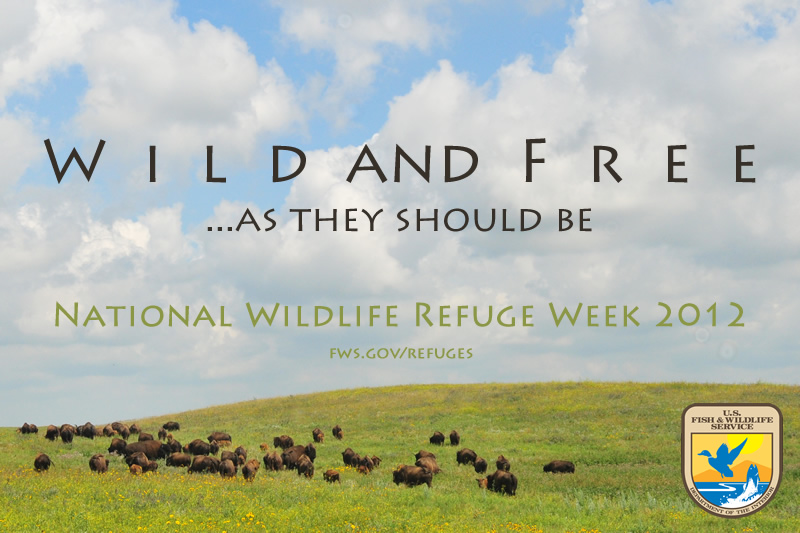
Wild and Free